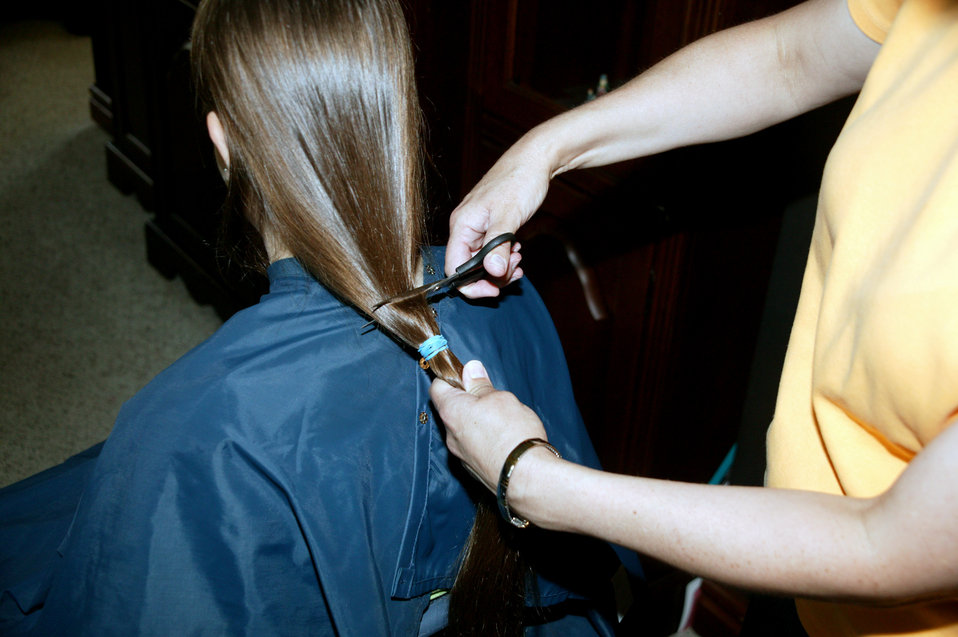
Mother, daughters share 'Locks of Love'

Bethany McCause's hair took 13 years to grow. It took her mom seconds to cut it. Bethany donated her ponytail to Locks of Love, a nonprofit organization that takes donated hair and turns it into hairpieces for financially disadvantaged children who suffer hair loss from long-term medical care. Bethany's father is Tech. Sgt. Bruce McCause of the 20th Component Maintenance Squadron at Shaw Air Force Base, S.C.